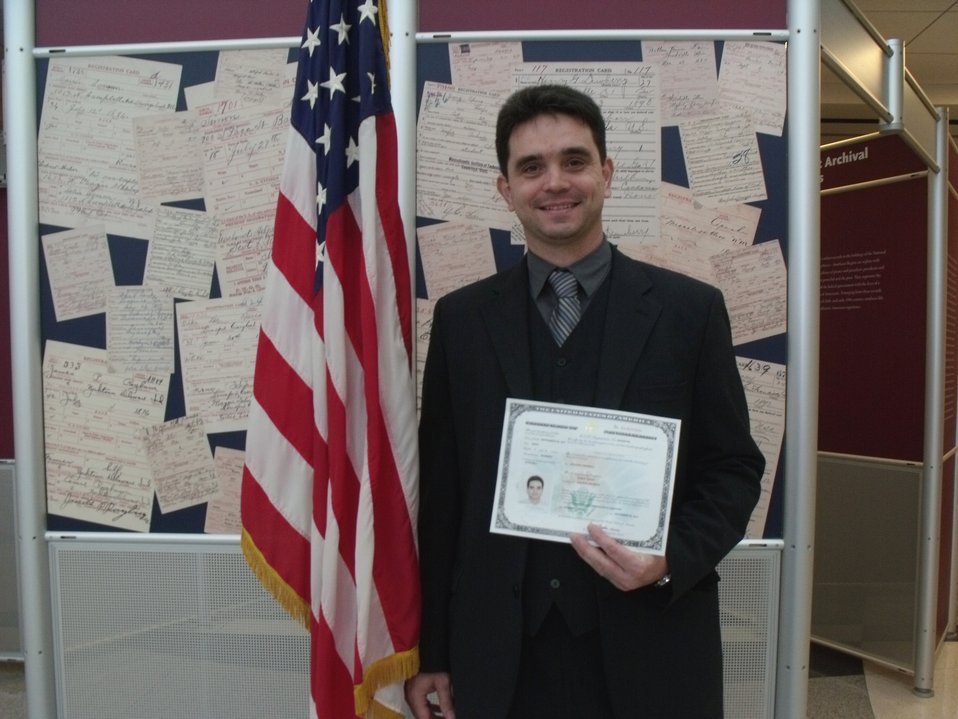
New Citizens